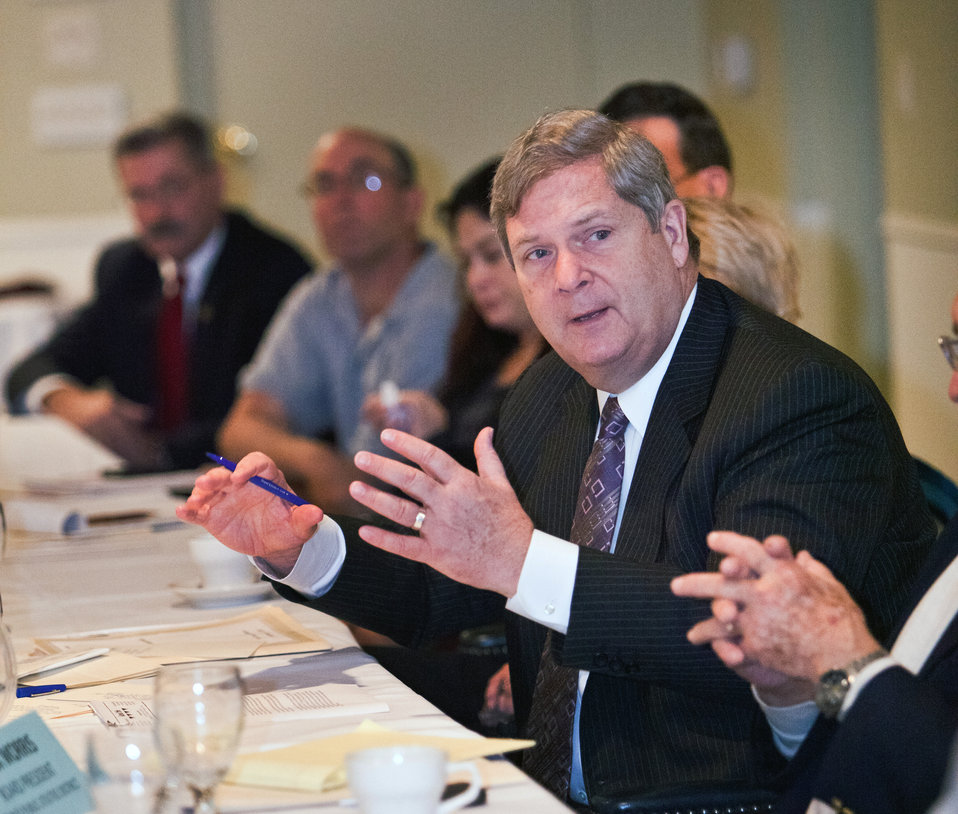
Agriculture Secretary Tom Vilsack speaks at a community roundtable in Weaverville, CA on Dec. 10, 2012.